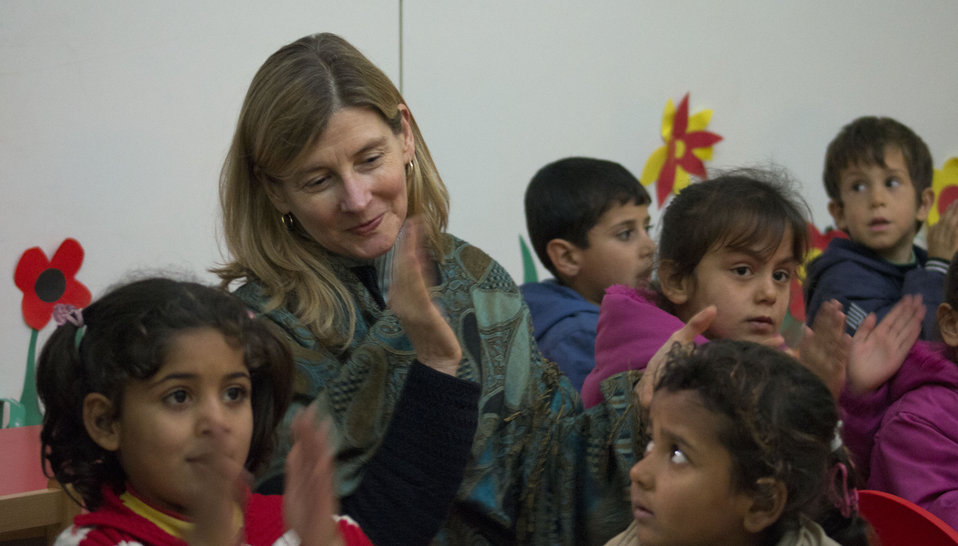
USAID Assistant Administrator Lindborg Plays With Syrian Refugees

USAID Assistant Administrator for Democracy, Conflict, and Humanitarian Assistance Nancy Lindborg plays with Syrian children at Islahiye Refugee Camp in Turkey on January 24, 2013.